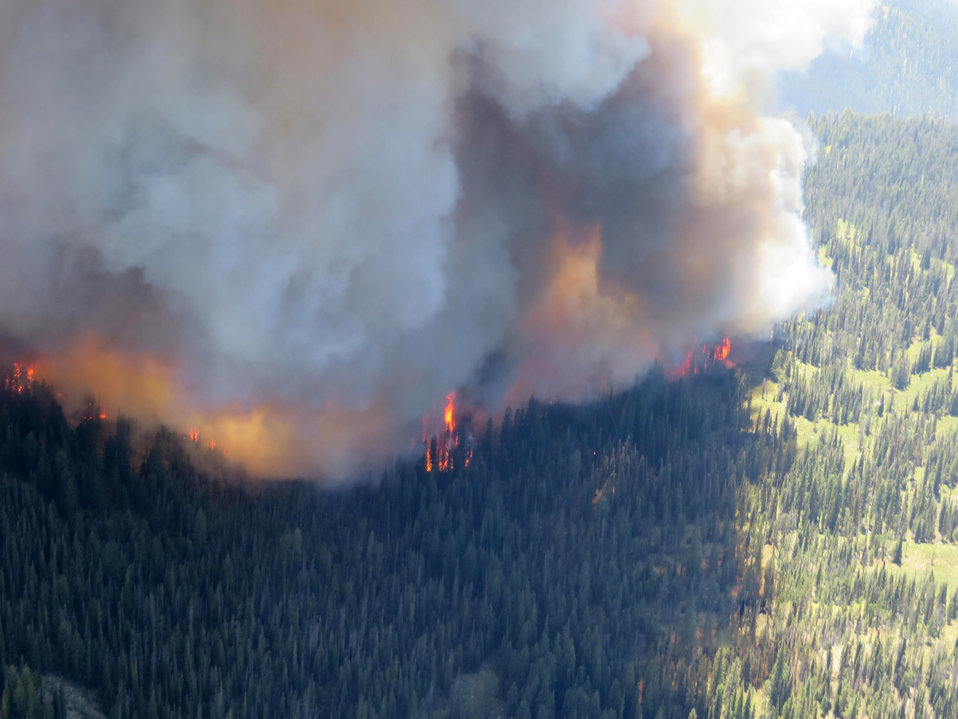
The Ridge Fire in the Boise National Forest, ID near Lowman, ID began on Jul. 16, 2013 by lightning and has consumed approximately 5,143 acres. The Ridge Fire is approximately 20% contained.